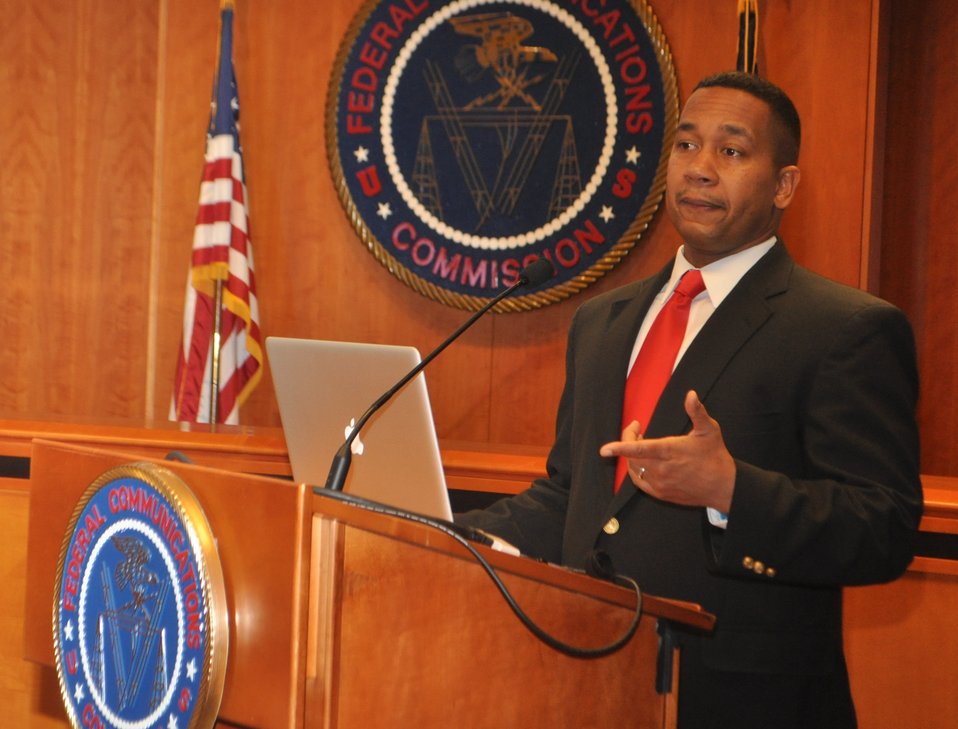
3.11.14 Accessibility and Innovation Initiative Speaker Series

Dr. Juan Gilbert.